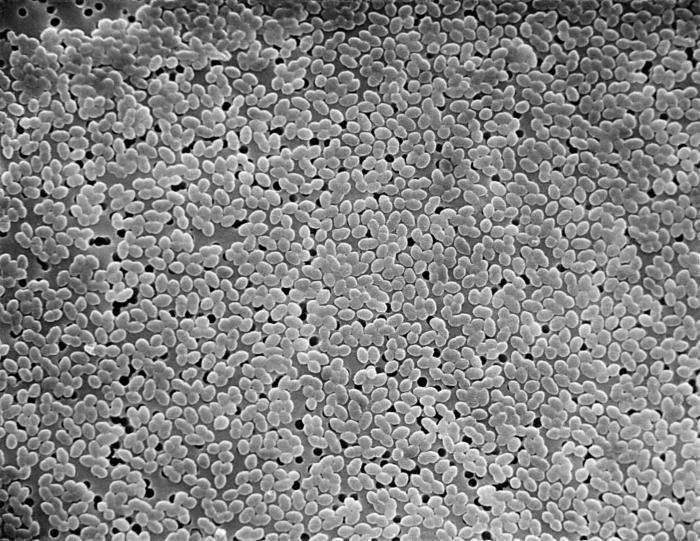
Scanning electron micrograph (SEM) of Enterococcus species.